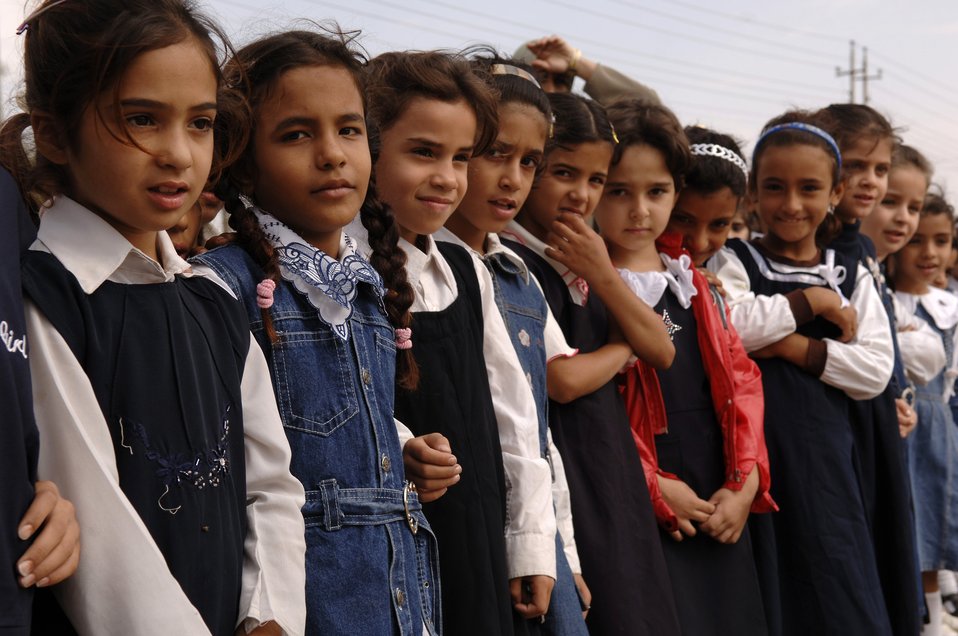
Operation Iraqi Freedom

Young Iraqi girls from the Al-Fahada primary school in Baghdad wait in line Nov. 1 to receive school supplies.